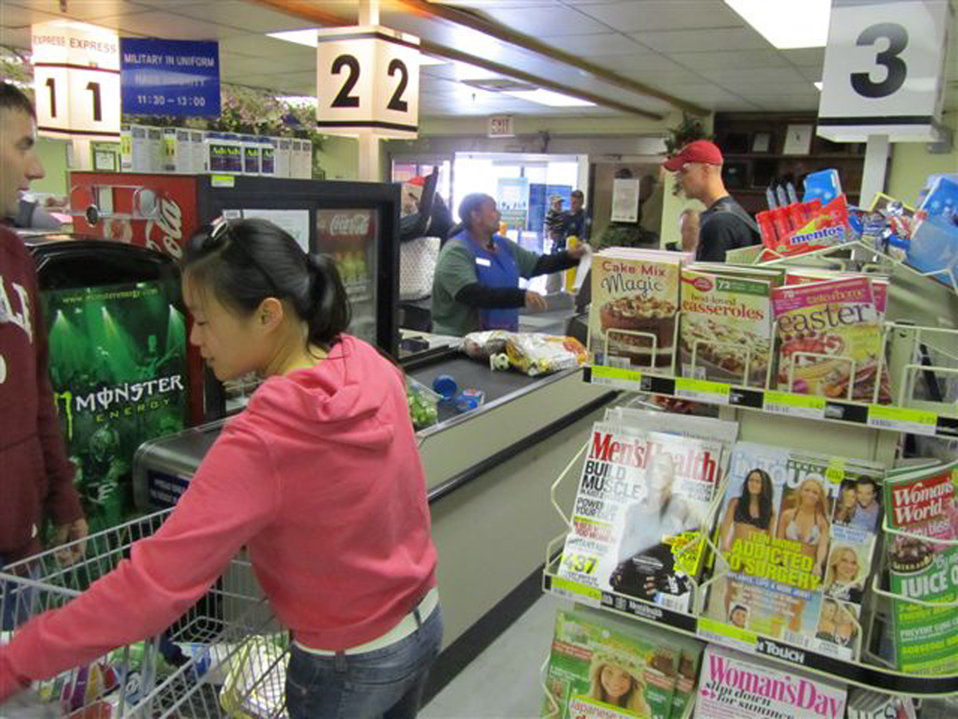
Commissaries to end magazine sales overseas

Commissaries overseas, such as this one at Camp Casey, South Korea, will end the sale of magazines in January 2012.